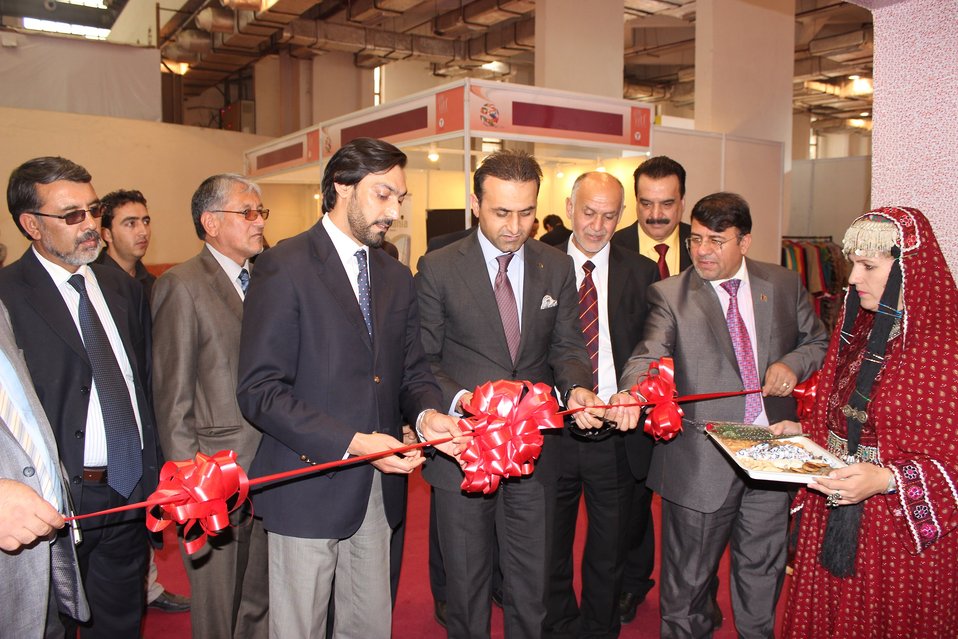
Ribbon cutting of Afghanistan Pavilion

Afghan private-sector and government officials -- including Afghanistan Chamber of Commerce and Industries Chief Executive Officer Mohammad Qurban Haqjo (center left) and Afghanistan's Ambassador to India Shaida Mohammad Abdali (center right) -- cut the ribbon to open the Afghanistan Pavilion on Nov. 14 at the India International Trade Fair.